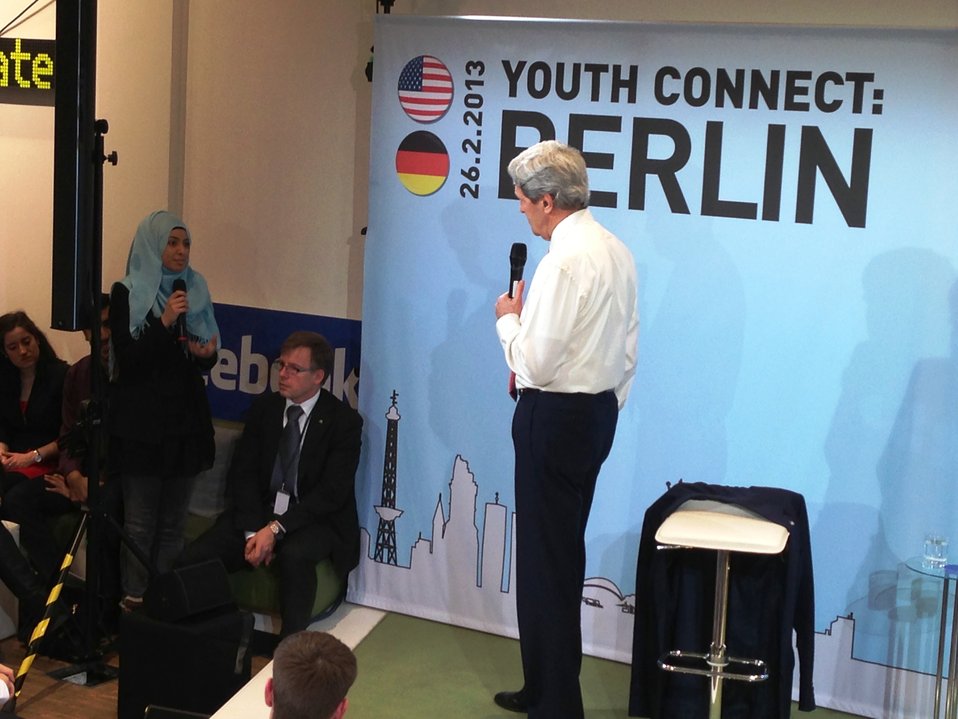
Secretary Kerry Engages Young German Innovators and Leaders in Berlin

U.S. Secretary of State John Kerry engages young German innovators and leaders at his first Youth Connect event with moderator/journalist Cherno Jobatey in Berlin, Germany, February 26, 2013.